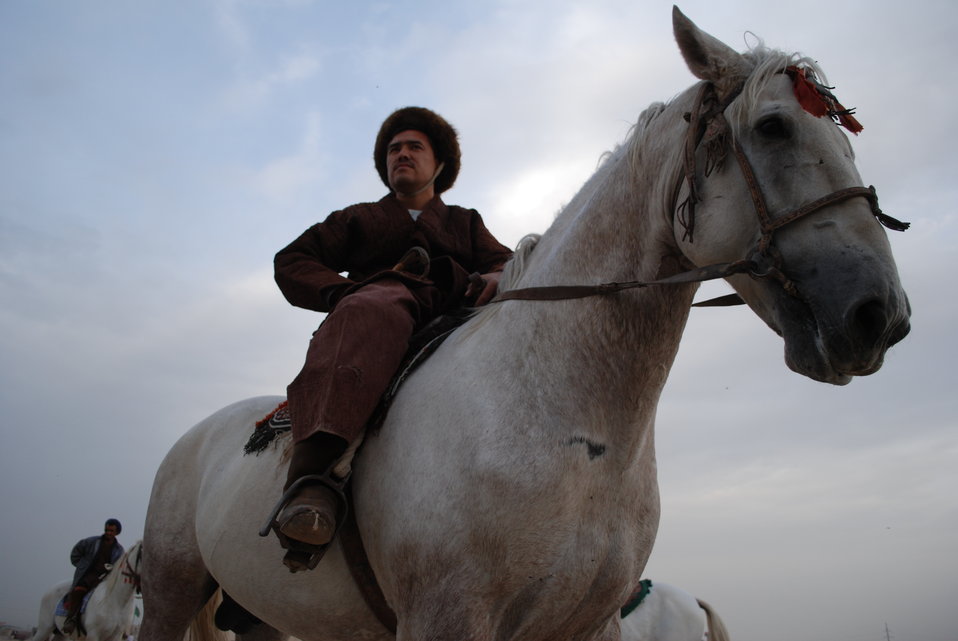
'On the Road' in Balkh Province